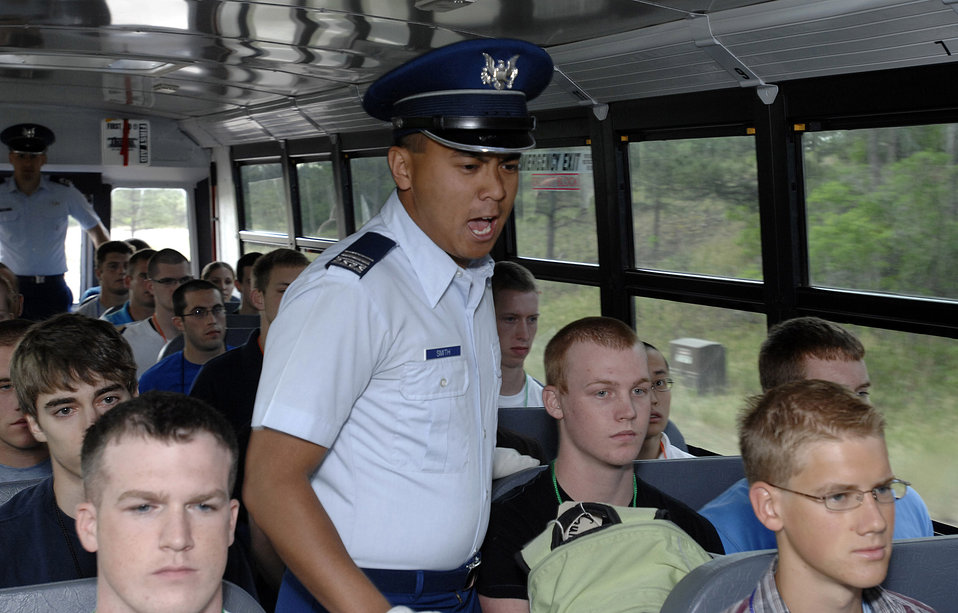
Class of 2012 arrives at Academy

Cadet 1st Class Robert Smith briefs members of the Class of 2012 as they are transported to the cadet area to begin Basic Cadet Training June 26 at the U.S. Air Force Academy, Colo. Inprocesing marks the start of 38 days of Basic Cadet Training, which is designed to prepare basic cadet trainees for entry into the cadet wing.